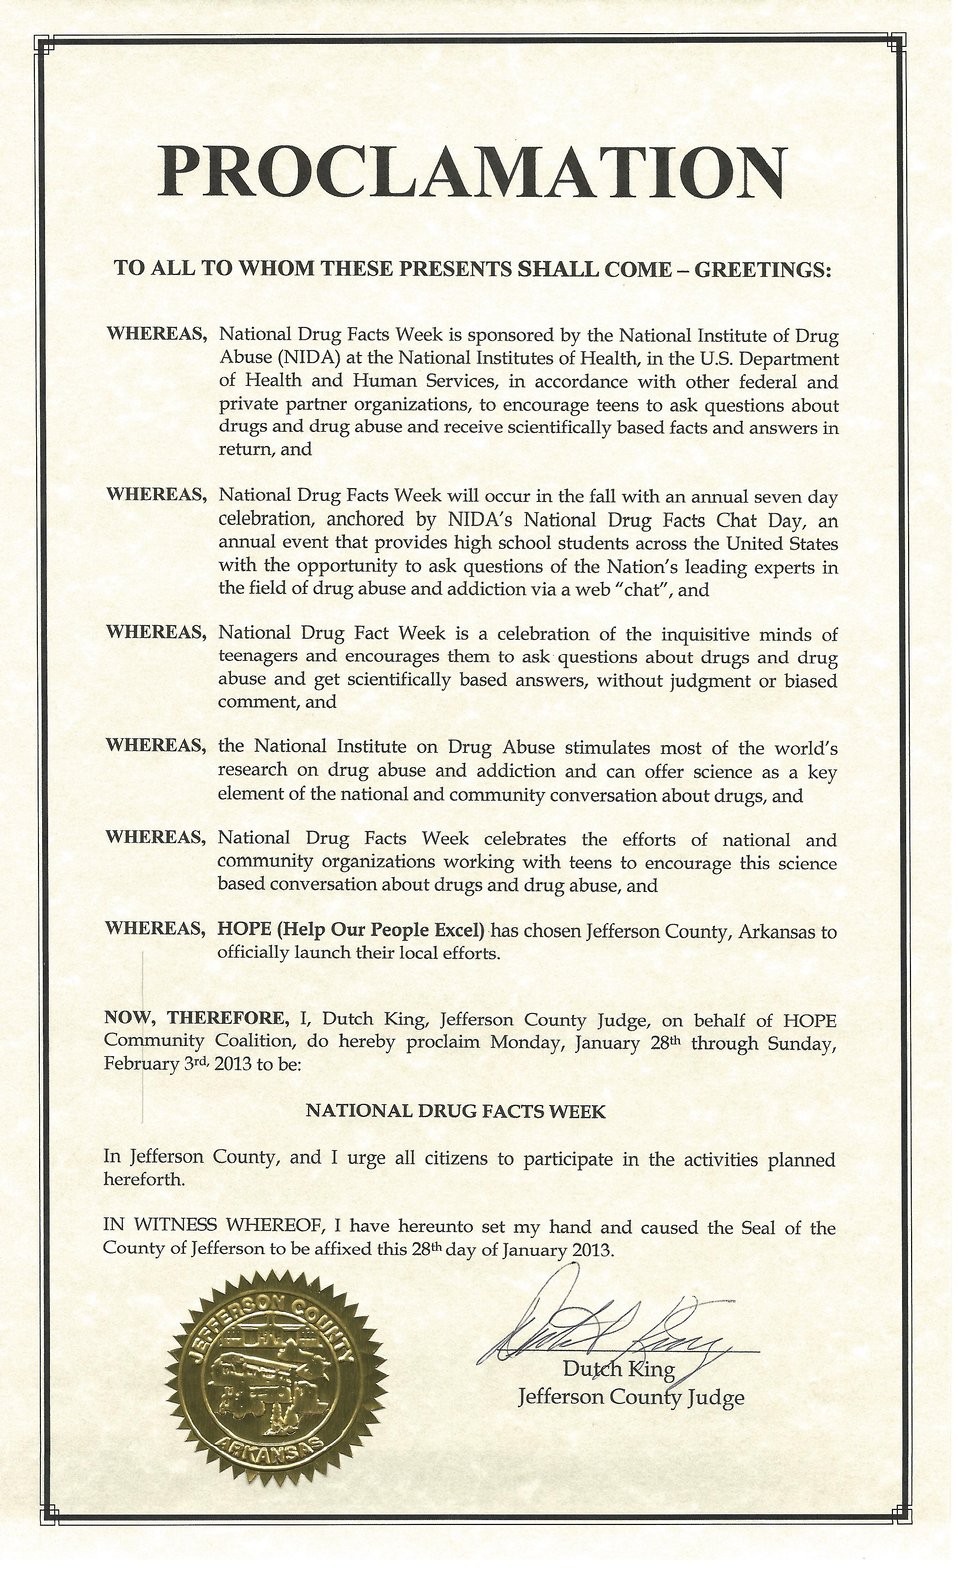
Jefferson County AR Judge Proclamation

Jefferson County, Ark. NDFW 2013 Proclamation.